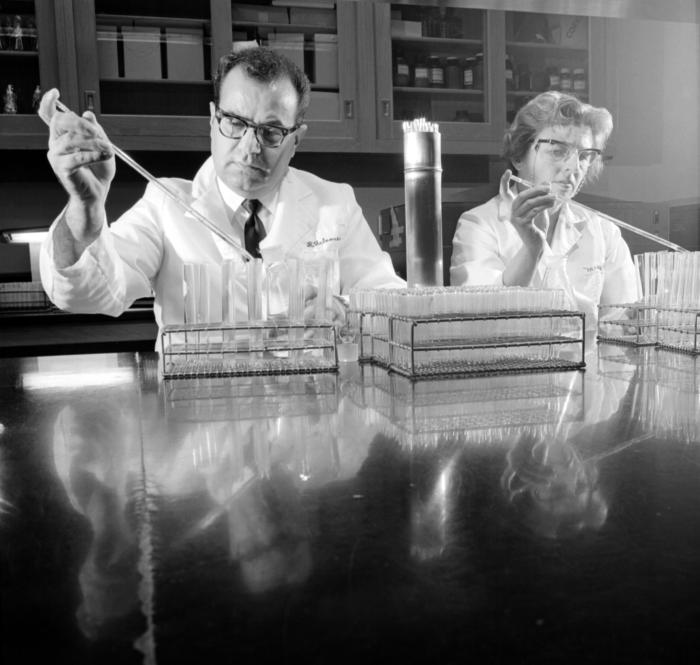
This historic 1967 photograph depicted two laboratory technicians, Rudy Falcone and Ann Alder, as they were in the process of performing a compliment fixation test.